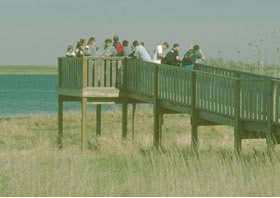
Huron Wetland Managment District

Look out post on our Maga Ta-Hohpi WPA West of Huron, South Dakota.